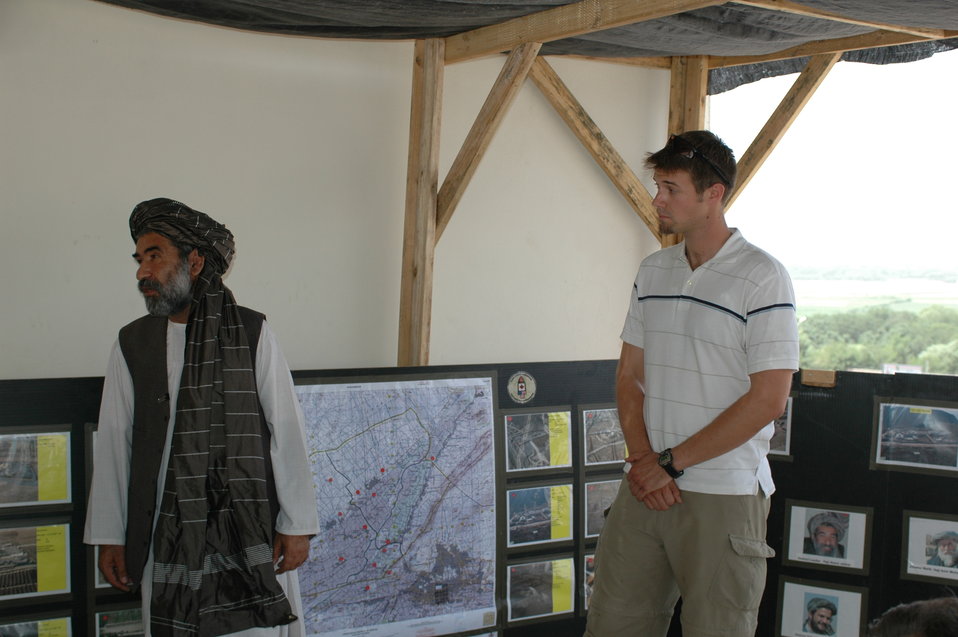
CODEL Berman